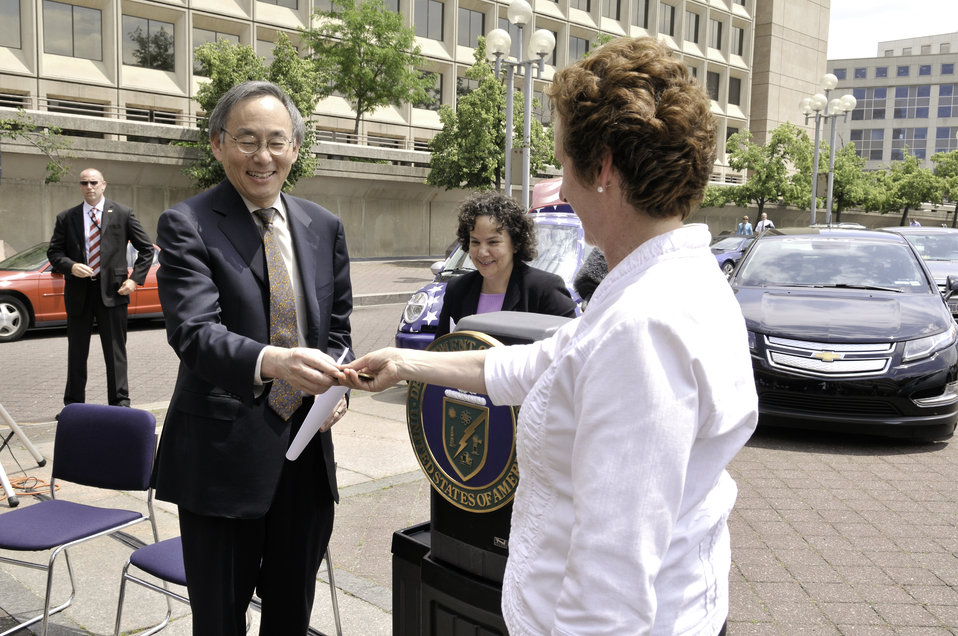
Clean Fleets Announcement 9 of 14

Martha Johnson, General Services Administrator, hands Sec. Steven Chu, US Department of Energy, the keys to the newest Chevy Volt in his fleet.